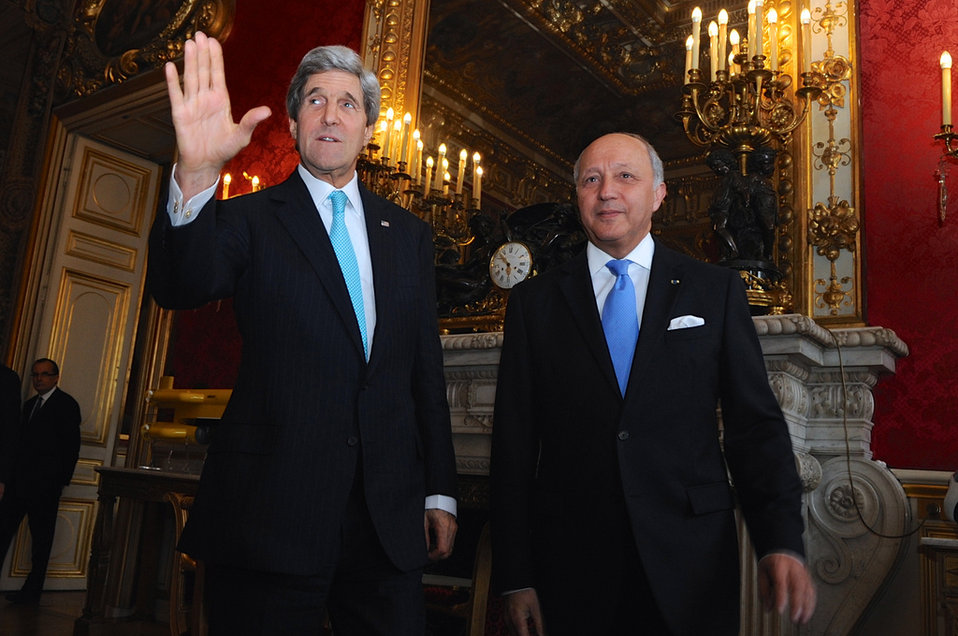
Secretary Kerry, French Foreign Minister Fabius Pose for Photographers Before Meeting in Paris

U.S. Secretary of State John Kerry and French Foreign Minister Laurent Fabius pose for photographers in Paris on March 30, 2014, before they met to discuss Kerry's upcoming meeting with Russian Foreign Minister Sergey Lavrov focused on Ukraine.